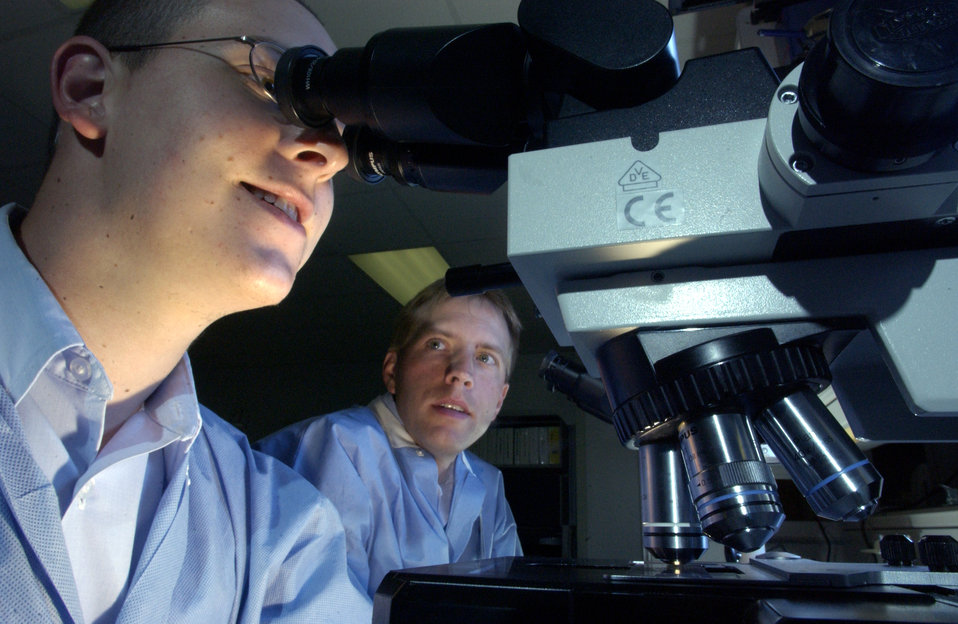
Load 'em up

ALEXANDRIA, La. -- Airman 1st Class Anthony Corkew loads a bomb onto an A-10 Thunderbolt II here. He is assigned to the 717th Aircraft Maintenance Squadron at Barksdale Air Force Base, La.